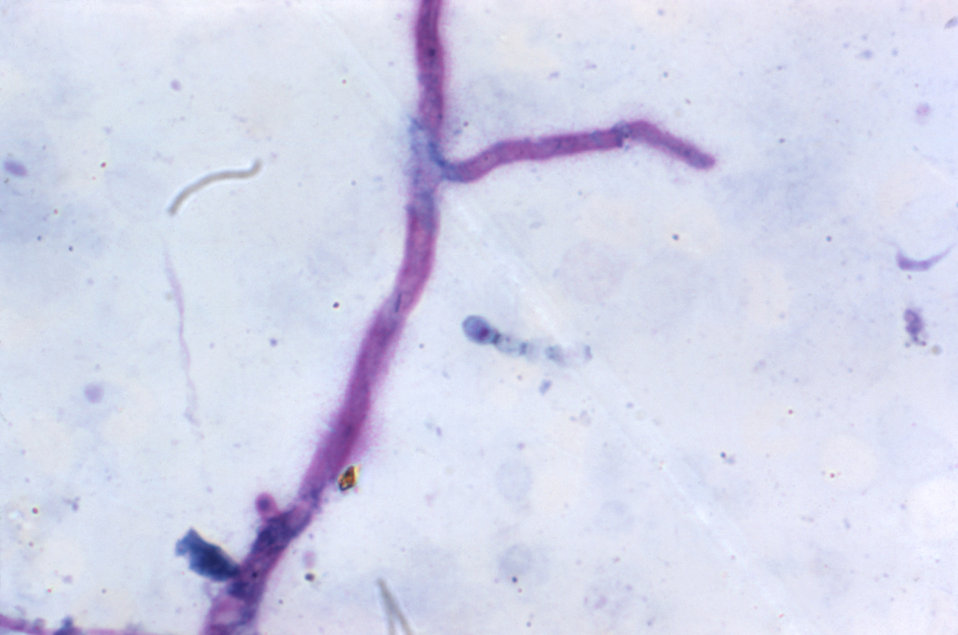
Magnified 1000X, this photomicrograph, upon analysis, revealed the presence of a mold contaminant in this blood smear, which produced this artifactual finding.